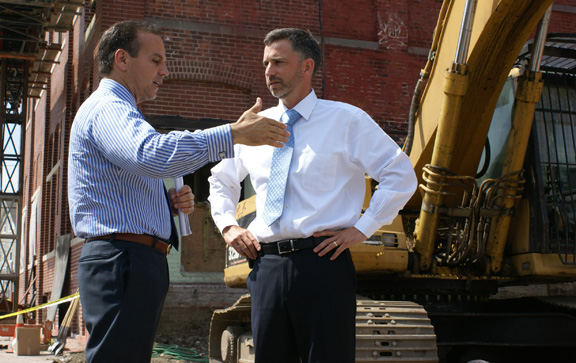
RI Ground Breaking 6/28/10

Assistant Secretary for Management Dan Tangherlini spoke with the Providence Mayor David N. Cicilline before the ground breaking for OpenDoors, an innovative new housing development funded in part by the Recovery Act.